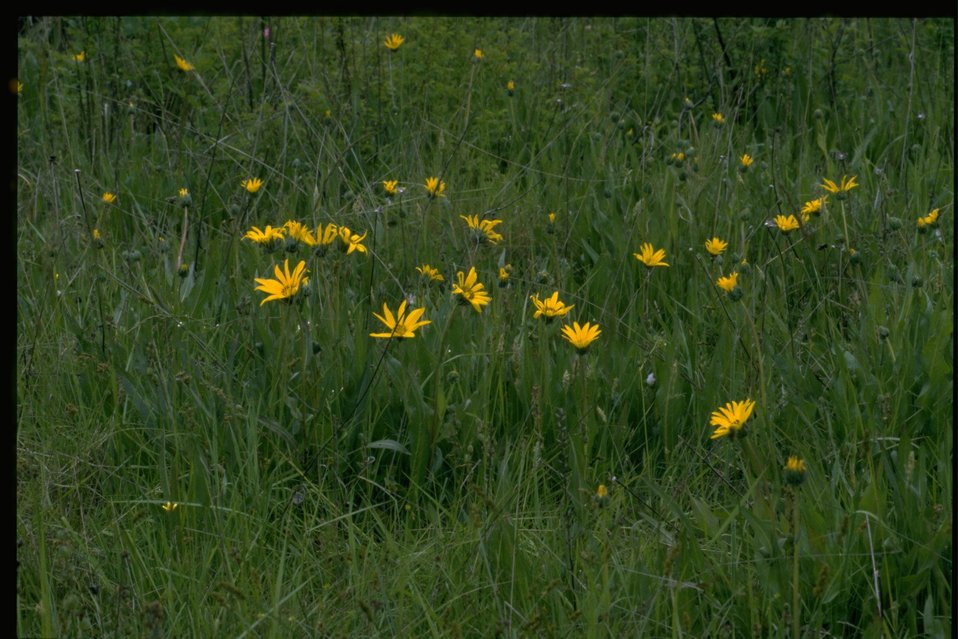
Farshot of Eriophyllum lanatum.